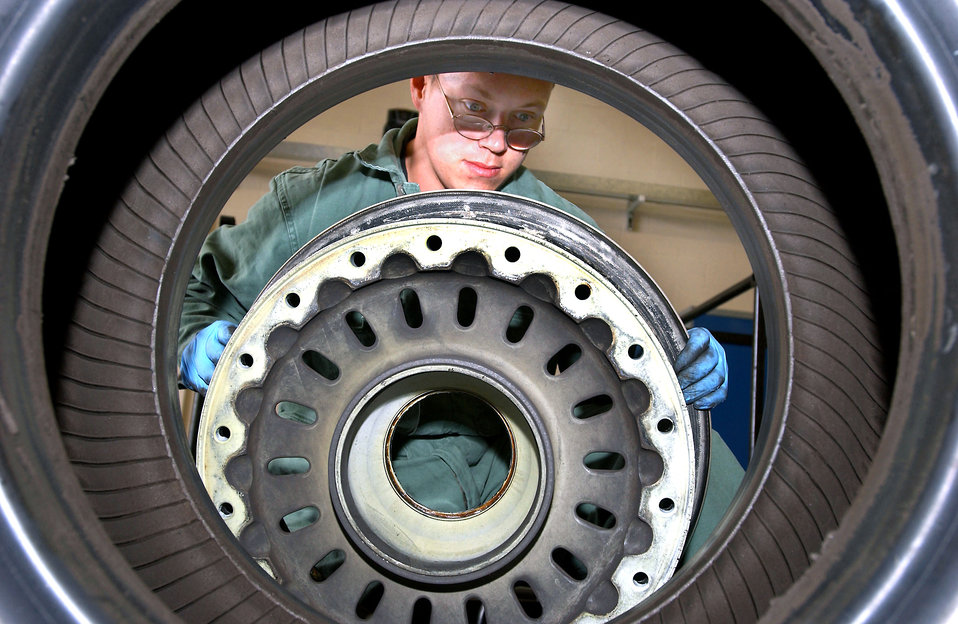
Can you spare a wheel?

ROYAL AIR FORCE LAKENHEATH, England -- Senior Airman James Carey removes a KC-135R Stratotanker wheel from the tire. His wheel and tire section here serves as the regional repair facility for all European, in-transient and Southwest Asian theaters. Carey is deployed to RAF Lakenheath from the 319th Maintenance Squadron at Grand Forks Air Force Base, N.D.